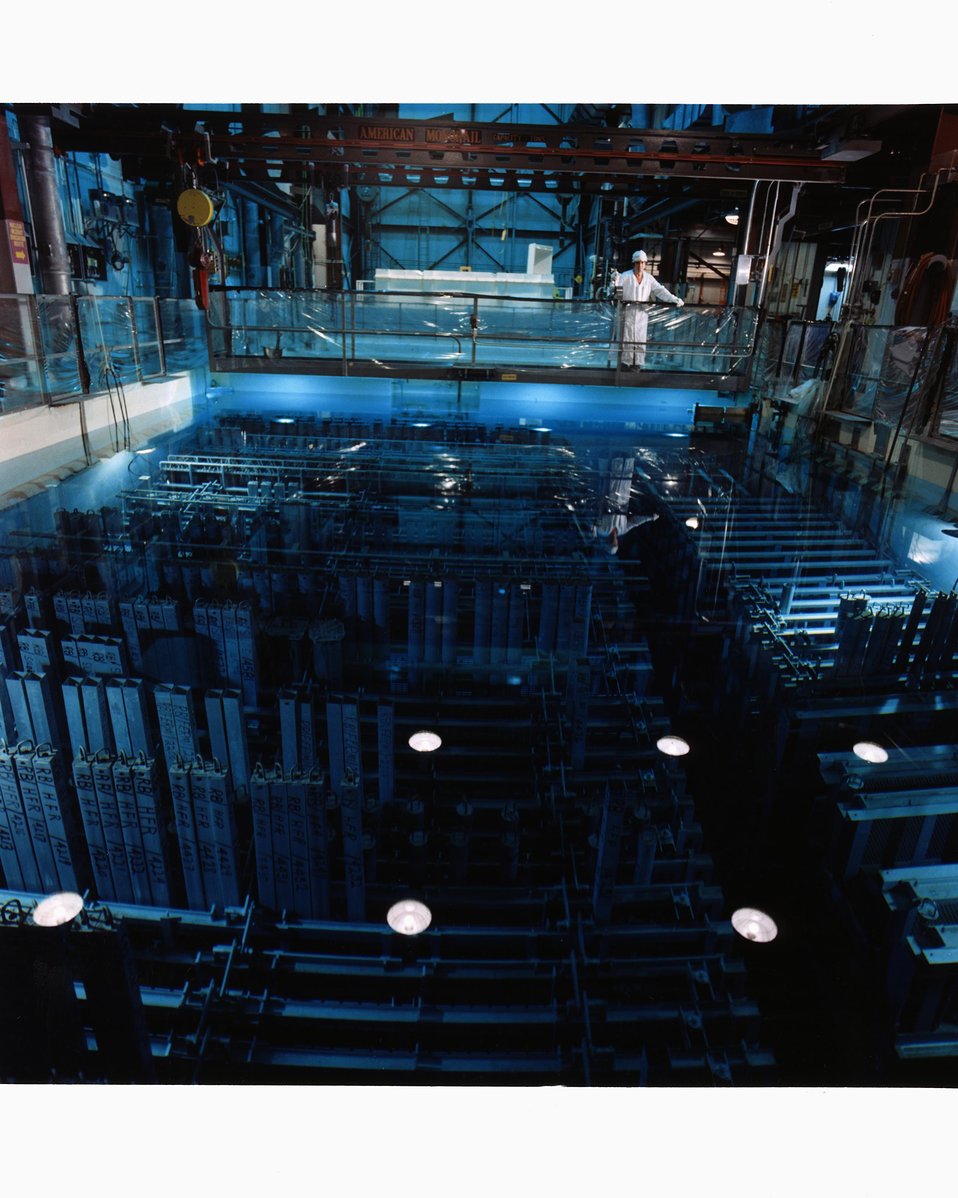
THE RECEIVING BASIN FOR OFFSITE FUELS AT SAVANNAH RIVER SITE.

IRRADIATED RESEARCH REACTOR FUEL ASSEMBLIES SENT TO THE SAVANNAH RIVER SITE NEAR AIKEN, S.C. ARE TEMPORARILY PLACED IN THIS STORAGE BASIN UNTIL THEY ARE CHEMICALLY PROCESSED TO RECOVER USEFUL ISOTOPES. THESE ASSEMBLIES COME FROM RESEARCH REACTORS NOT COMMERCIAL REACTORS.